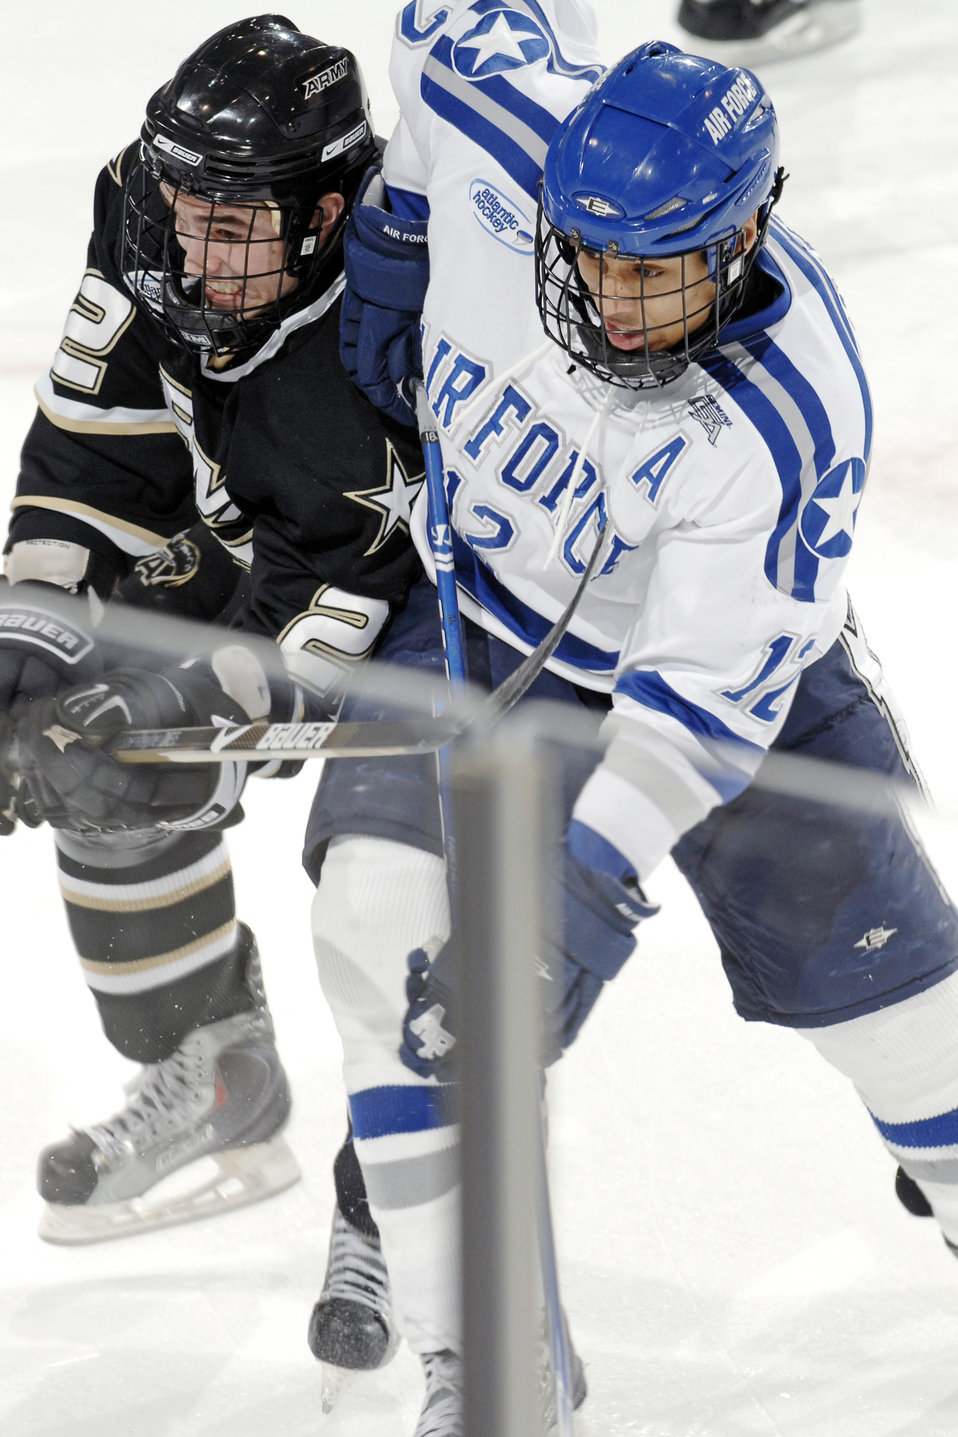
Air Force beats Army Black Knights

Falcon senior forward Matt Fairchild battles it out on the boards with Army's Marcel Alvarez as the Falcons defeated Army 3-0 at the U.S. Air Force Academy's Cadet Ice Arena March 12, 2010. Air Force went on to win the best-of-three series 2-0, advancing to the Atlantic Hockey Association Final Four against Sacred Heart March 19 in Rochester, N.Y.